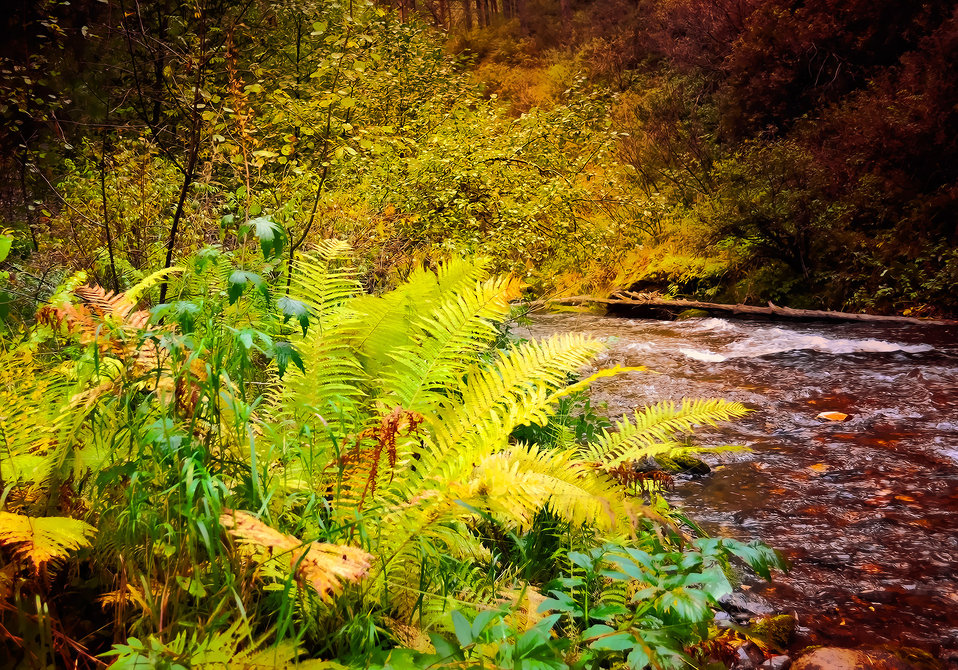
Fern

Beautiful autumn fern leaves on the bank of the river..